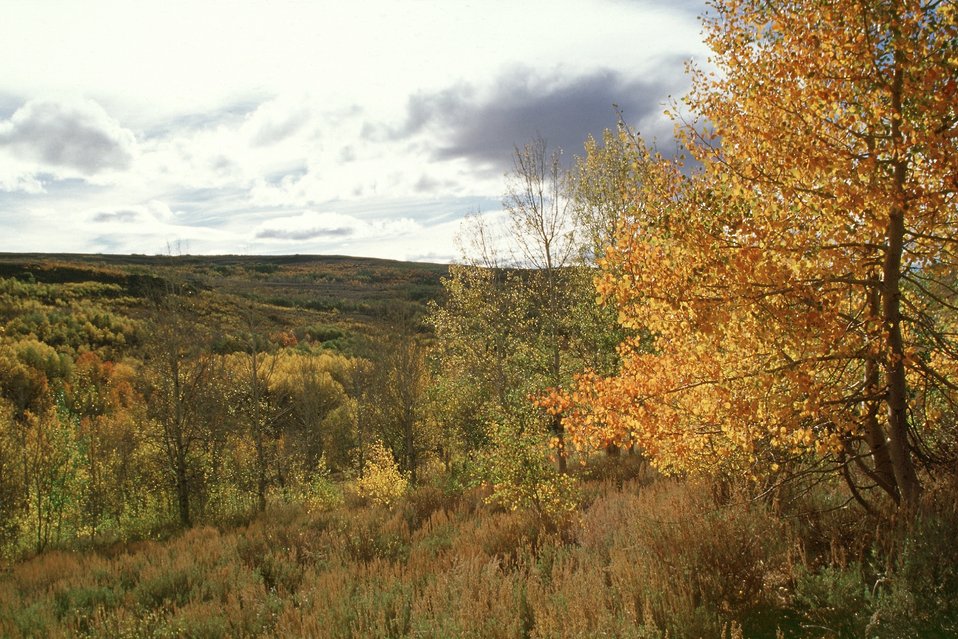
Aspens at Fish Creek, Steen's Mountain.